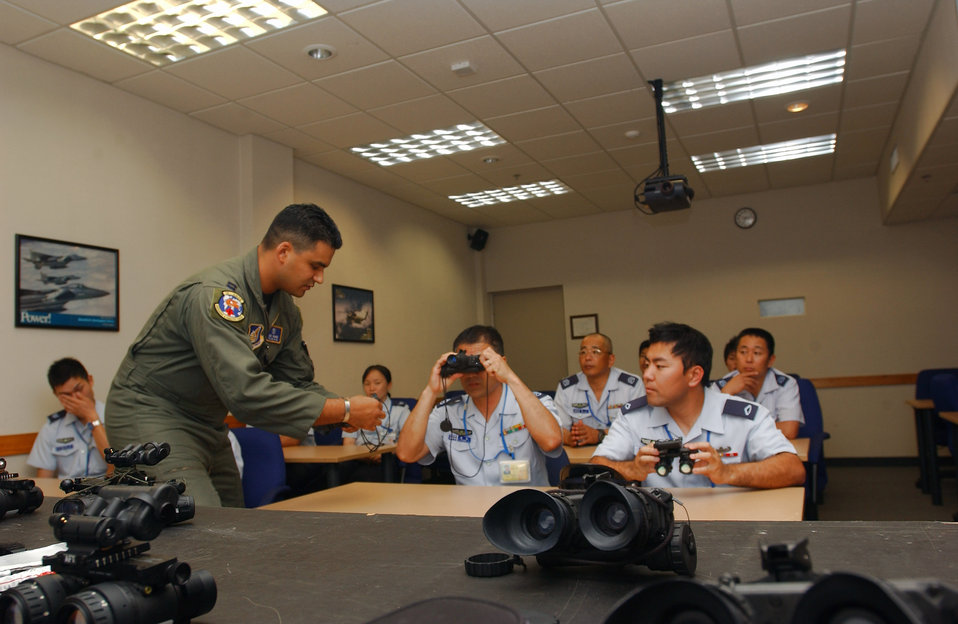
Japanese NCOs visit Kadena

Capt. Alejandro Ramos gives a demonstratoin of night-vision technology to Japanese Air Self Defense Force airmen during an April 23 tour at Kadena Air Base, Japan. The tour was part of a bilateral arangment between 5th Air Force and the government of Japan to offer Airmen from both sides an inside look at how their counterparts do business. Captain Ramos is the 18th Aerospace Medicine Squadron officer in charge of Aerospace Physiology Operations Element .